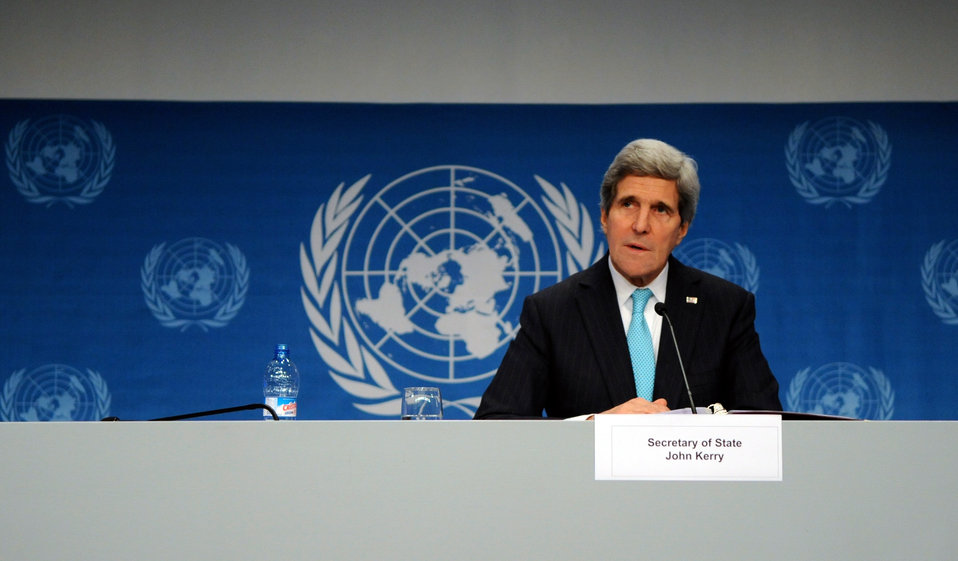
Secretary Kerry Addresses Reporters After Geneva II Meeeting

U.S. Secretary of State John Kerry addresses reporters at the end of the opening session of the Geneva II conference in Montreux, Switzerland, on January 22, 2014.